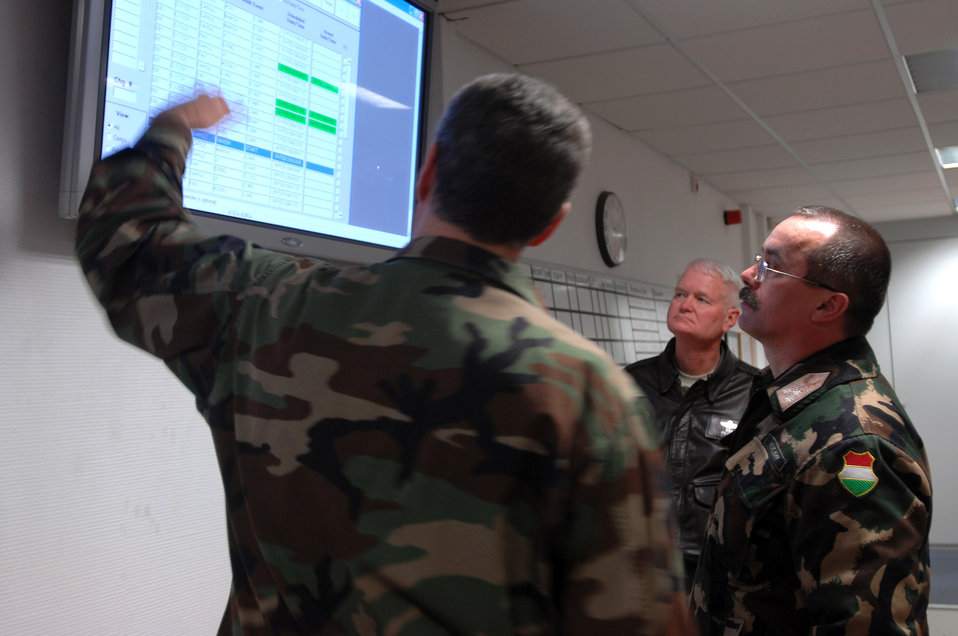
Hungarian AF leader visits Ramstein

Lt. Col. Peter Tremblay, the 435th Logistics Readiness Squadron commander (left), explains to Lt. Gen. Laszlo Tombol, the Hungarian Joint Forces Command commander, how the mission screen in the Joint Mobility Processing Center works during a tour of the center Feb. 6 at Ramstein Air Base, Germany.